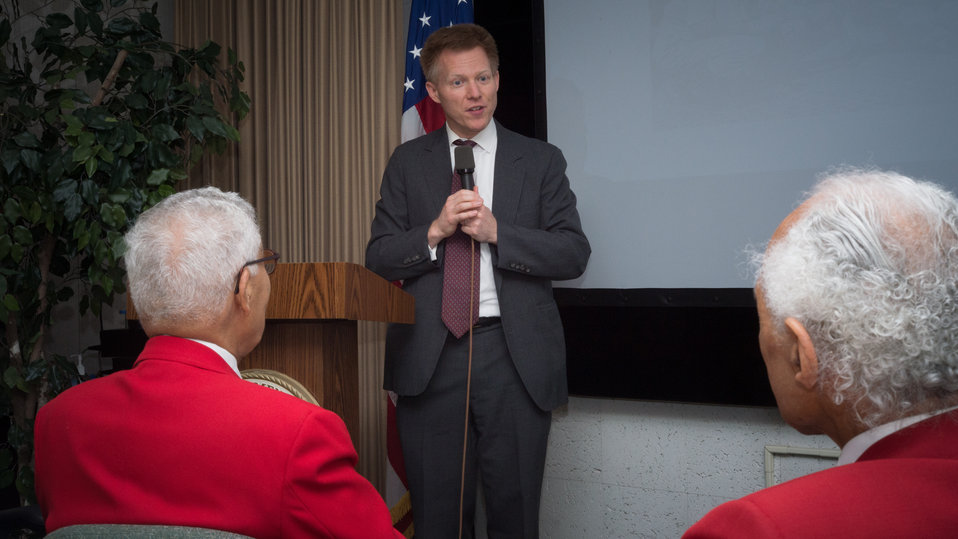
U.S. Department of Agriculture (USDA) Senior Advisor Max Finberg speaks at the USDA Office of the Assistant Secretary for Civil Rights (OASCR) event, “In conversation With Tuskegee Airmen,” at USDA in Washington, D.C. on Thursday, Mar. 27, 2014.